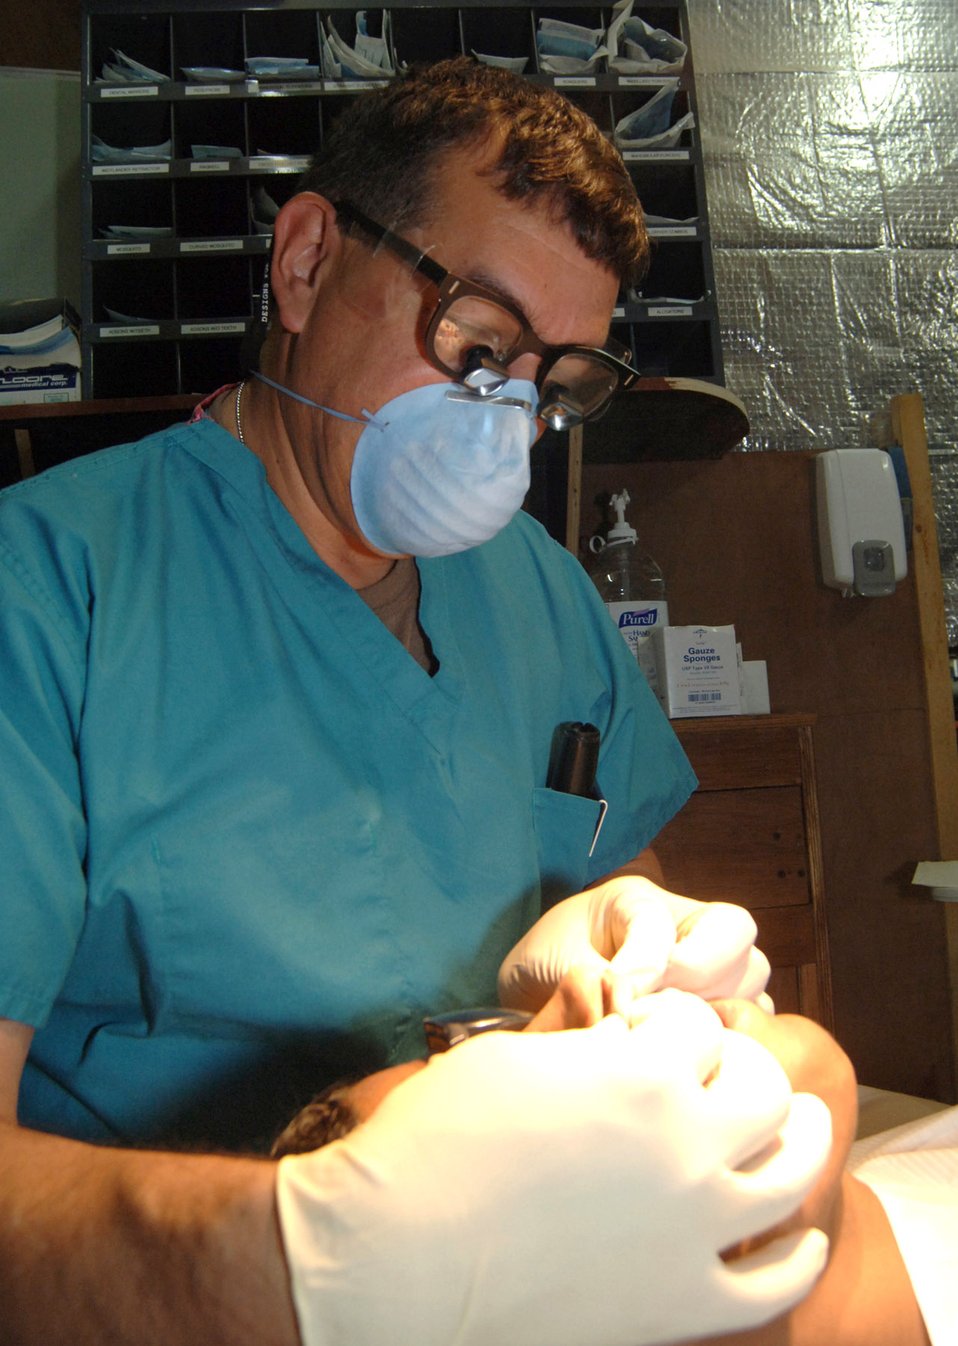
Dentist, technician contribute to Iraqi security

Col. (Dr.) Michael McHenry extracts a tooth from an Iraqi patient at a medical clinic for Iraqi national police at the Victory Base Complex outside Baghdad, Iraq, on Wednesday, June 14.